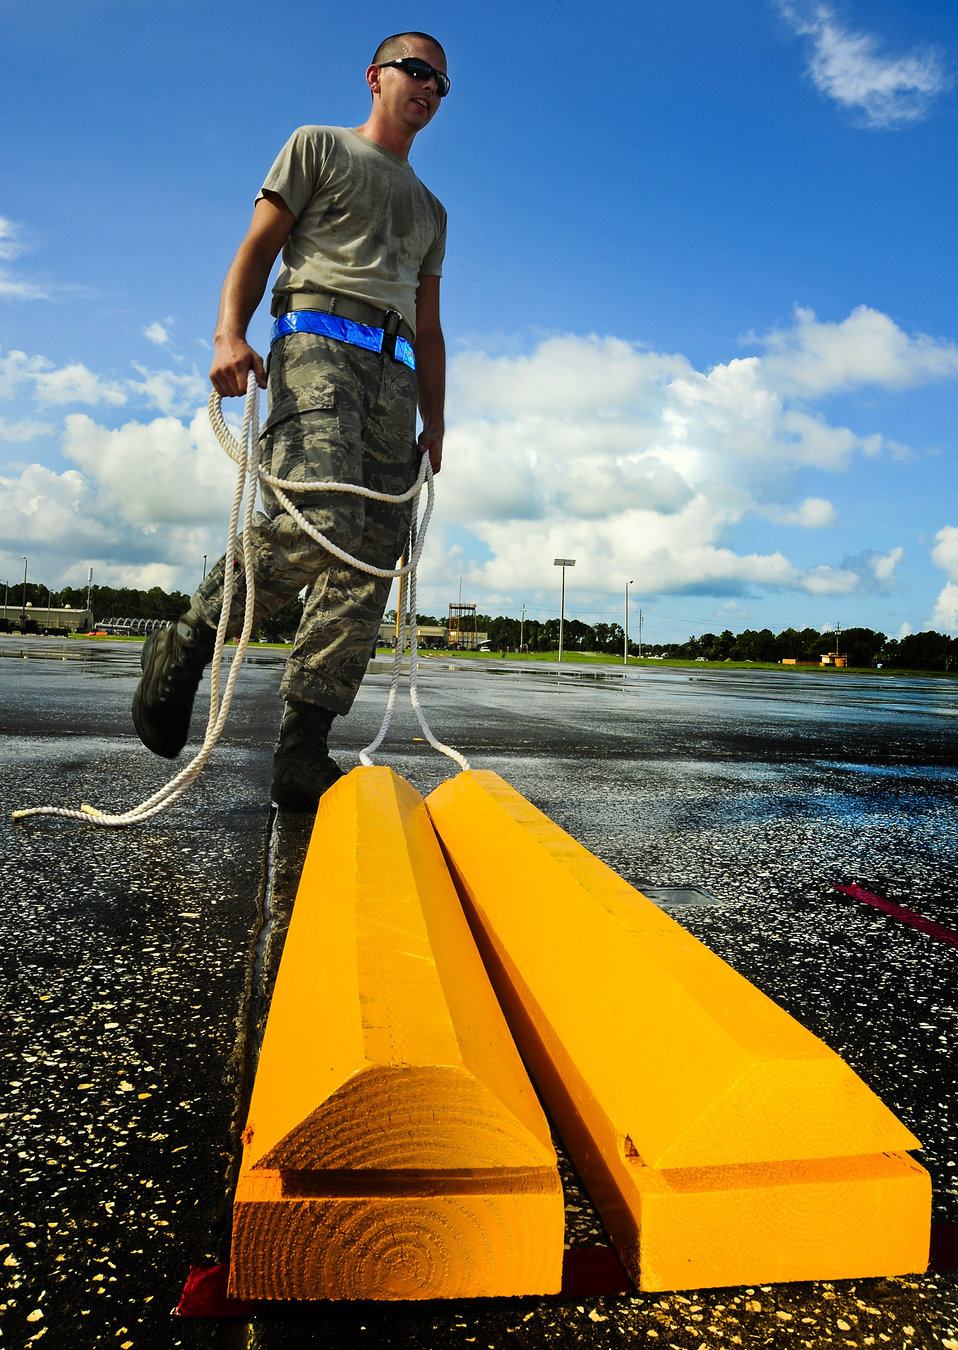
Safety first

Senior Airman Ryan Pizzeck prepositions aircraft chocks July 14, 2011, on the flightline at MacDill Air Force Base, Fla. Airman Pisseck is a KC-135 Stratotanker crew chief assigned to the 6th Aircraft Maintenance Squadron.